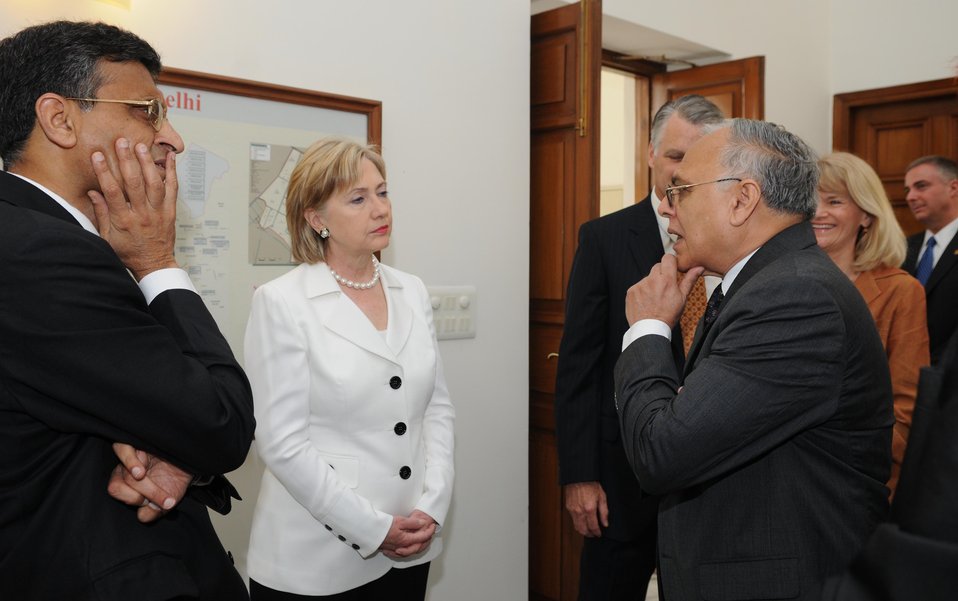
Secretary Clinton Speaks at University of Delhi

U.S. Secretary of State Hillary Rodham Clinton and U.S. Ambassador-Designate to India Timothy Roemer, and University of Delhi Vice Chancellor Deepak Pental listen to Pro Vice Chancellor Dr. SK Tandon prior to Secretary Clinton's speech at the University of Delhi in New Delhi, India July 19, 2009.